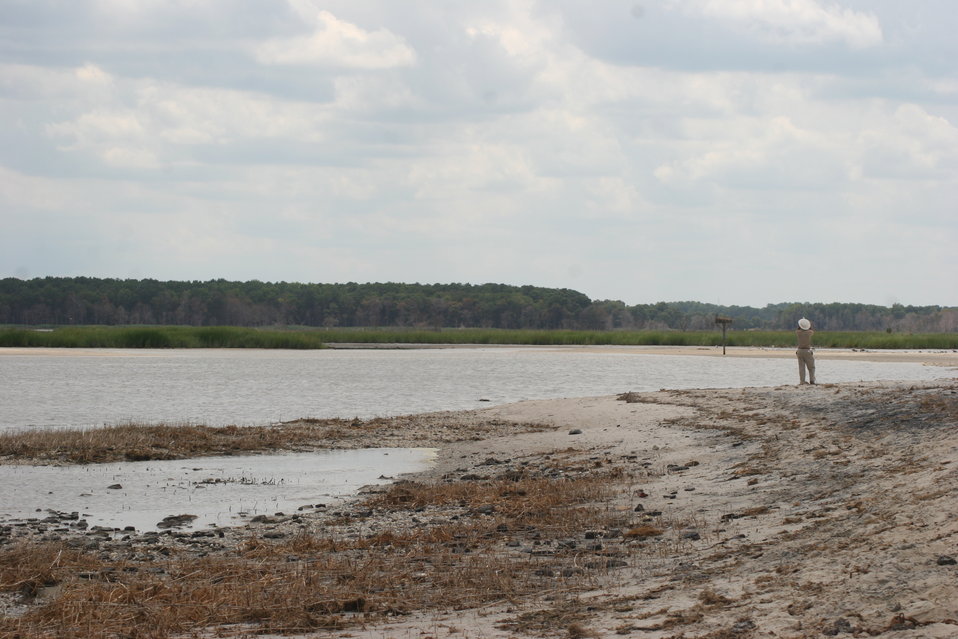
Marsh at Prime Hook NWR